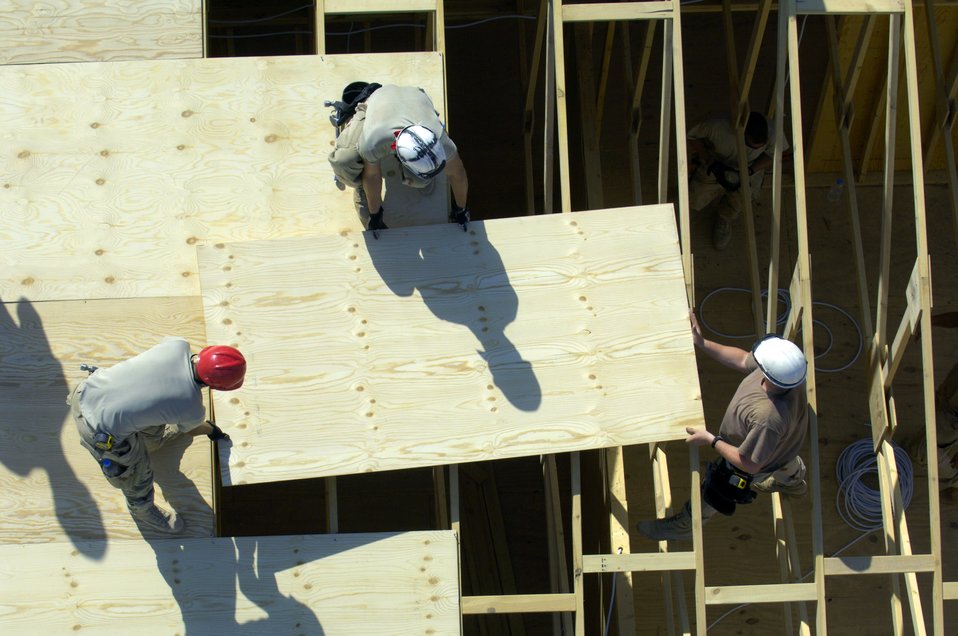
RED HORSE Airmen support Army in southern Baghdad

Airmen with the 557th Expeditionary RED HORSE Squadron work on the roof of a tactical operations center June 22 at Forward Operating Base Kalsu, Iraq. The Rapid Engineer Deployable Heavy Operational Repair Squadron Engineers , or RED HORSE, Airmen are forward deployed from Balad Air Base, Iraq, to build four tactical operations centers for the Army's 2nd Brigade combat team, 3rd Infantry Division headquartered here. The 2/3 ID is currently running operations out of tents. The RED HORSE unit, made up of Air Guard, Reserve and active-duty Airmen, was requested by the Army to come into this